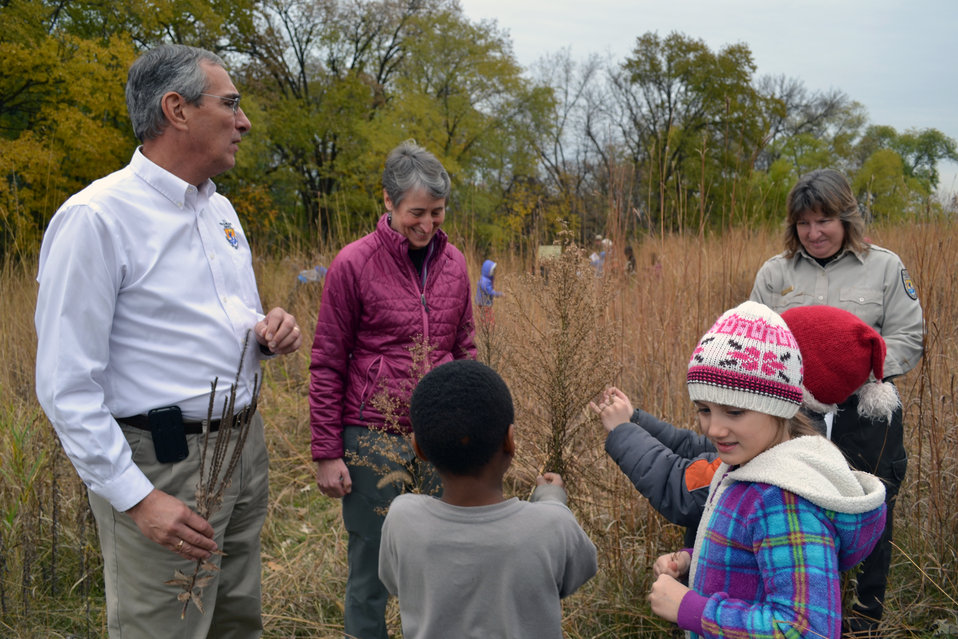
Prairie Seed CollectionSOI MNVStaff

Secretary Sally Jewell and Regional Director Tom Melius help Minneapolis second graders collect native prairie seeds during her visit to Minnesota Valley National Wildlife Refuge.